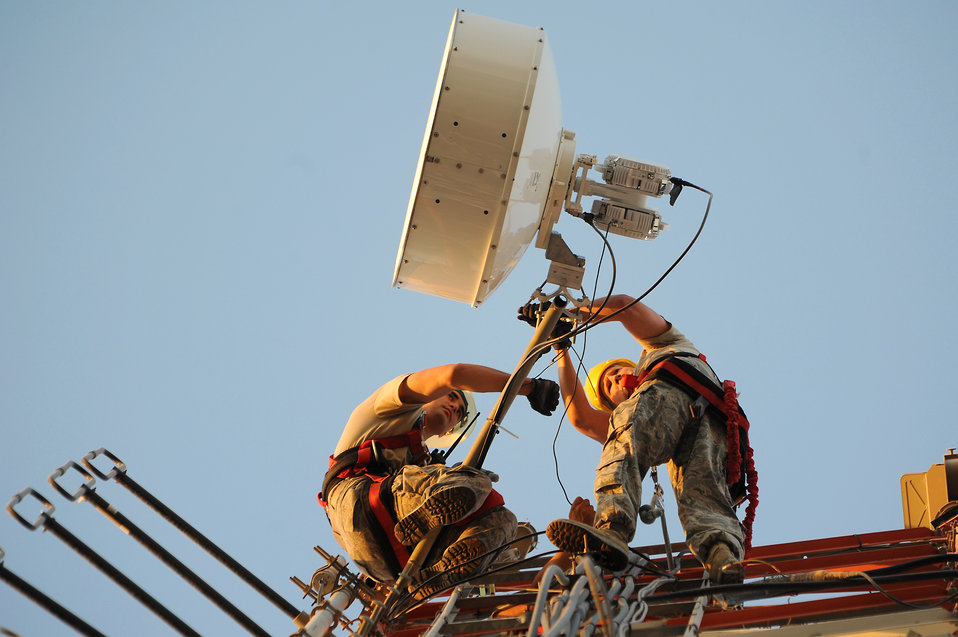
Towering above

Airman 1st Class Steve Lippitt and Master Sgt. Todd Tripplett perch on a limb of a 140-foot-tall communications tower to adjust the signal strength of a microwave antenna Sept. 13, 2011, at Sather Air Base, Iraq. The microwave antenna will provide network access for State Department personnel. Lippitt and Tripplett are both technicians with the 447th Expeditionary Communications Squadron.